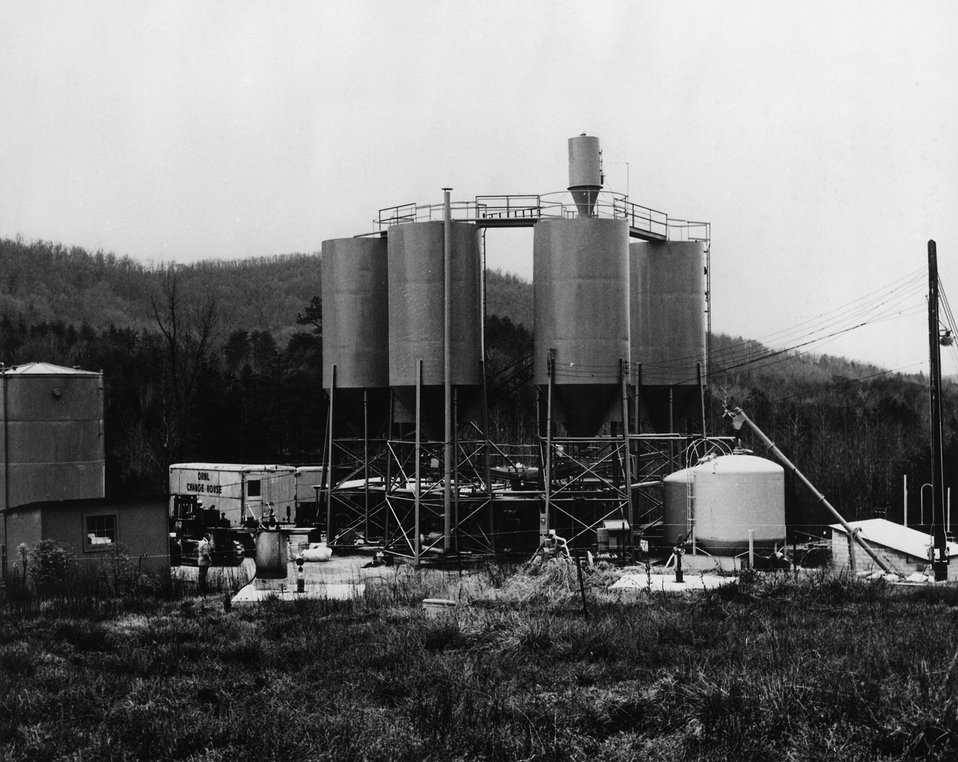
Oak Ridge National Laboratory will make its first permanent intermediate-level radioactive waste disposal at this surface plant. c. 1967